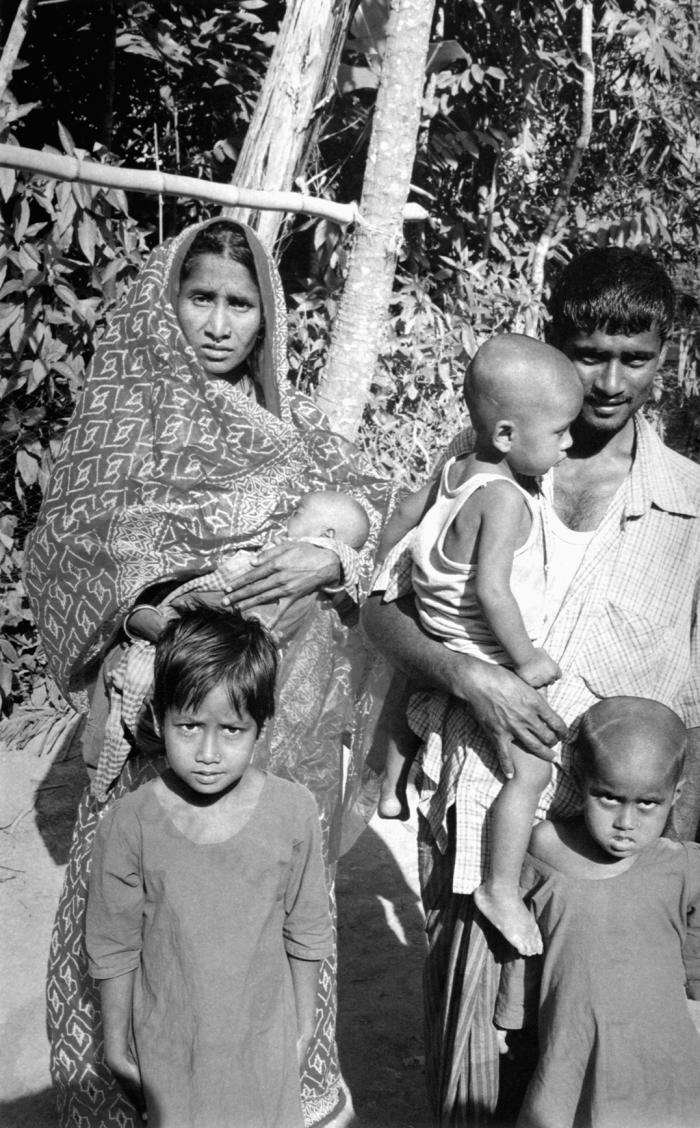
This photograph was captured in 2000, and what makes it so intriguing, is that the Bangladesh woman holding her child is Rahima Banu, who 25 years previously, at the age of 2 years, was recorded as the last known, naturally-occurring case of smallpox, i.e., variola major, in the world. In this image, Ms. Banu is standing with her other three children, one of whom is being held by a man, who presumably was her husband. Her own children were being raised in a time where the fear of smallpox was no longer present, which to date, is one of the world's most important public health success stories.